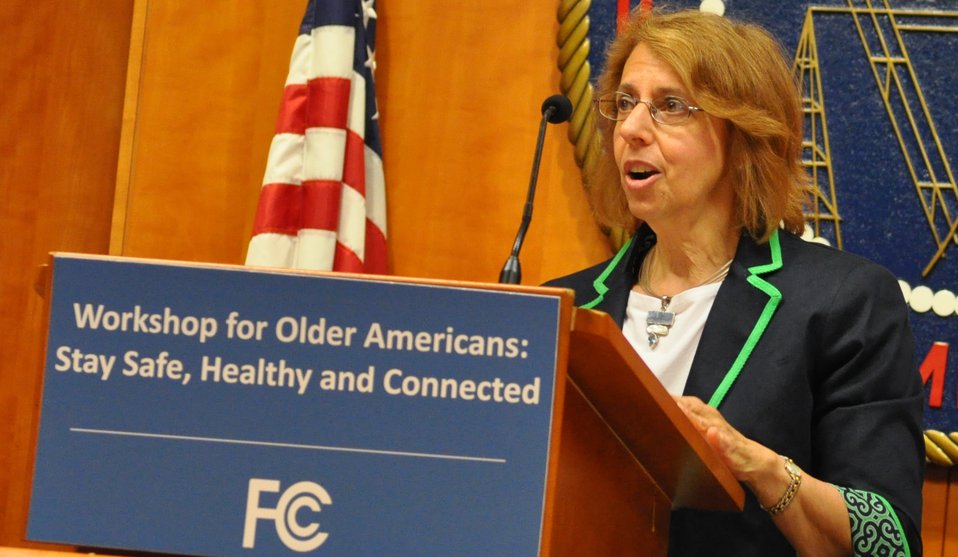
5.22.2014 Workshop for Older Americans: Stay Safe, Healthy and Connected

Karen Coates, Office of Disability Integration and Coordination, Federal Emergency Management Agency (FEMA)